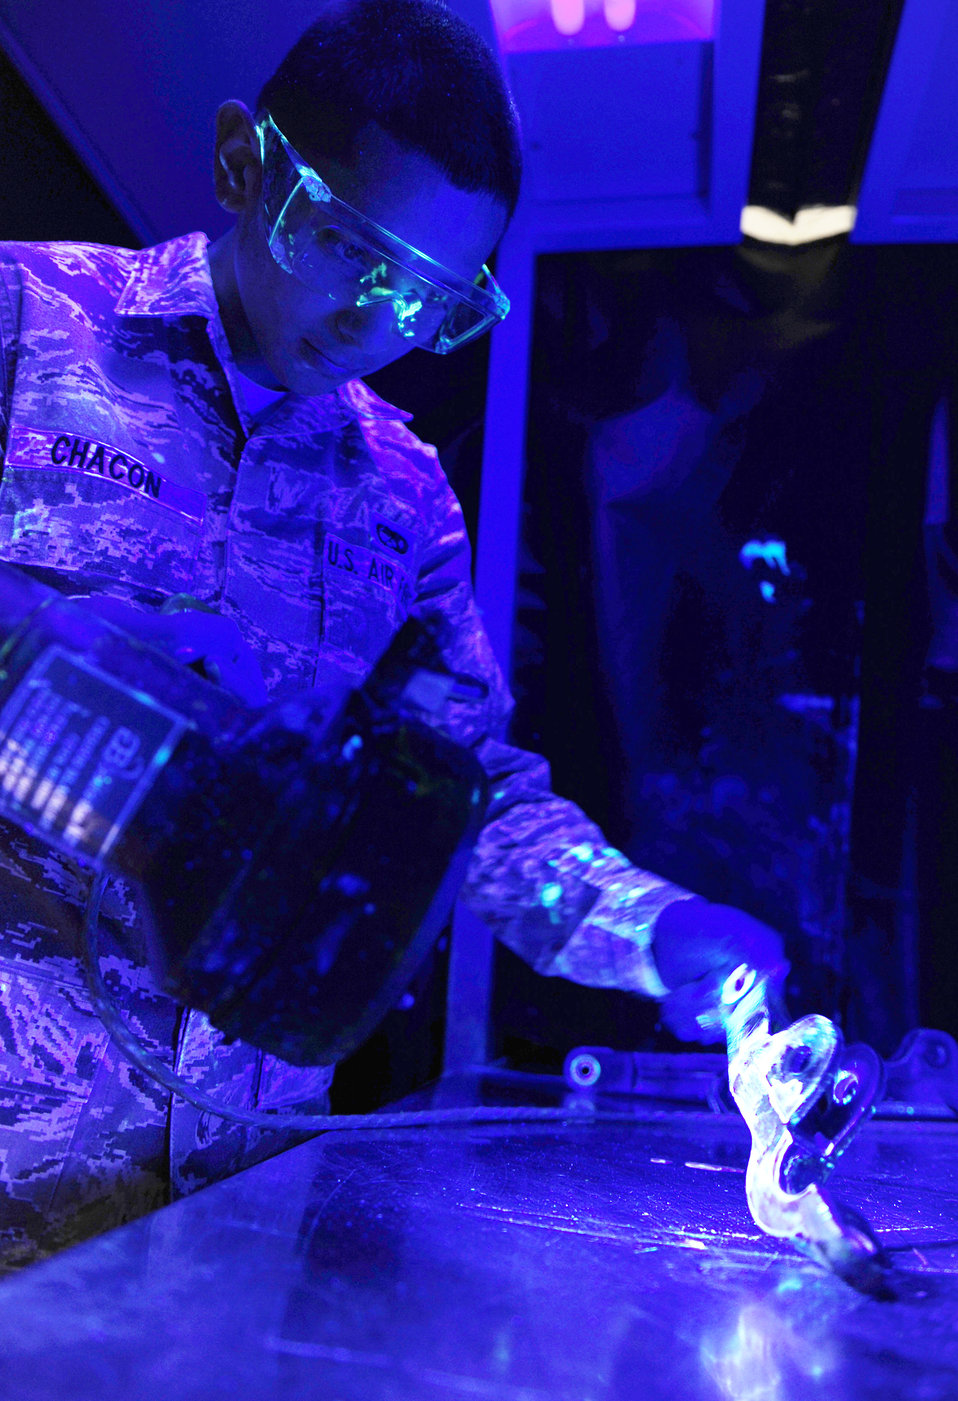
Here's the evidence

Airman Hector Chacon performs a liquid penetrant inspection at the base non-destructive inspection shop Feb. 11, 2010, at Holloman Air Force Base, N.M. This type of inspection is performed to check the integrity of non-magnetic aircraft metal parts. Airman Chacon is a non-destructive inspection specialist with the 49th Maintenance Squadron.